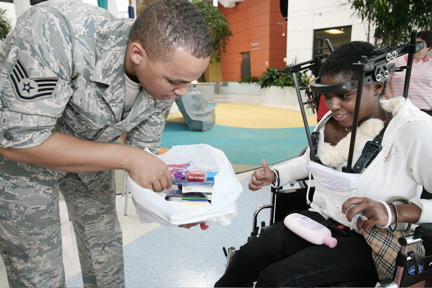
Airmen for Children expands to Beale

Staff Sgt. Jewell Hicks hands toys to a child at a medical facility as part of Airmen for Children. Sergeant Hicks is currently an imagery analyst at the 13th Intelligence Squadron at Beale Air Force Base, Calif.